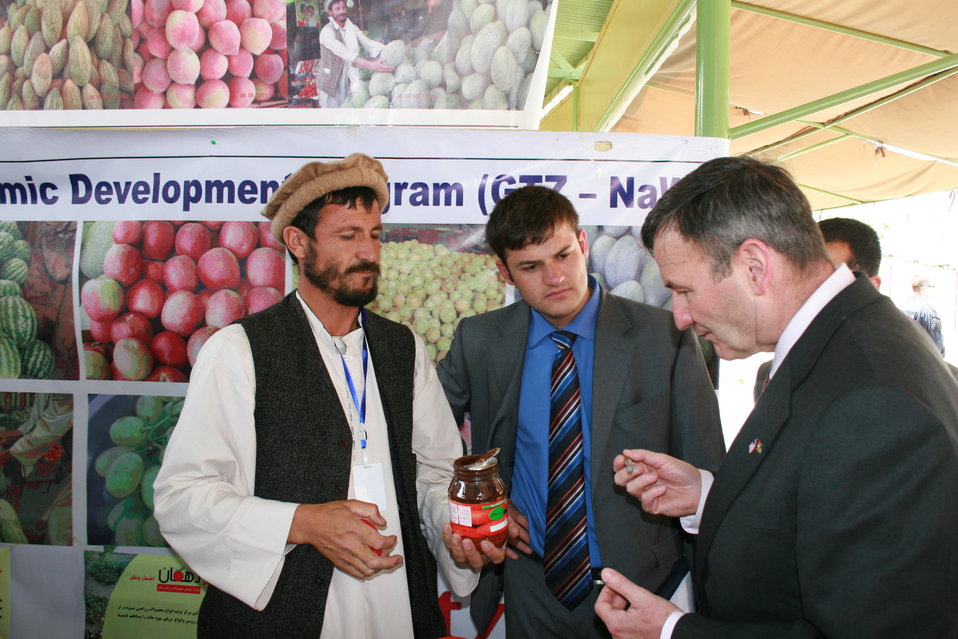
AgFair tasting Tomato Paste May 20, 09

On May 20, 2009, Ambassador Eikenberry joined government officials, farmers, agribusiness representatives, and international investors at the launch of the Kabul International AgFair on May 20. Held at the Ministry of Agriculture, Irrigation and Livestock’s Badam Bagh Demonstration Farm in Kabul, the fair showcases Afghanistan’s wealth of fresh produce, provides lucrative business opportunities, and demonstrates innovative agricultural technologies. It is expected to attract more than 50,000 participants from May 21-22.

U.S. Ambassador Karl Eikenberry and Afghan Acting Minister of Agriculture, Irrigation and Livestock (MAIL) Saleem Kunduzi gave opening remarks at the AgFair’s launch. “The United States Government is co-sponsoring national and regional AgFairs like this one to encourage trade and generate business opportunities in the agriculture sector,” Ambassador Eikenberry said. “In a country that is 80 percent rural, promoting licit crops and agriculture sector job creation are two essential steps to successful development in the region.”

Member of Parliament Abdul Salam Qazizada offered bold remarks, stating that we need to engage more with farmers in every province throughout the country.

Following the ceremony, Ambassador Eikenberry visited a number of vendors at the fair with Acting Minister Kunduzi and Mr. Qazizada. In speaking with farmers displaying their produce, Ambassador Eikenberry found that many have increased yields due to USAID assistance, have found regional buyers for their produce, and were grateful for the opportunities that AgFair provides.

Ambassador Eikenberry also discussed the state of agriculture with Minister Kunduzi and Mr. Qazizada. They agreed that while some progress has been made, there is a great deal more work to be done. Ambassador Eikenberry reiterated from his speech that USDA Secretary Vilsack recently met with Minister Rahimi to discuss the U.S. commitment to agriculture development. In a message to the Afghan public, Secretary Vilsack stressed that the USG aims to play a leading role by bringing more agriculture experts to the provinces and supporting agriculture research such as the Badam Bagh Demonstration Farm. Additionally, he looks “forward to working together to increase agricultural productivity, which will result in more jobs throughout the entire value chain, and a better quality of life for the citizens of Afghanistan.”

The United States Government is proud to support Afghan agriculture. Since 2002, America has provided more than 1 billion dollars in assistance to agriculture and rural development. AgFairs like the one Ambassador Eikenberry visited creates awareness of Afghanistan’s expanding agricultural sector, promotes new agricultural technologies that increase productivity, and provides a forum to connect farmers to local and international buyers. These results will contribute to Afghanistan’s prosperity.

We are already seeing the results of these fairs. Since 2007, Afghanistan’s agricultural fairs have attracted more than 500,000 participants from across the nation and the world, generated millions of dollars in sales of the country’s high-value produce, and provided participants with a competitive edge in one of the fastest growing markets in Central Asia.

As Ambassador Eikenberry stated, “The word is out – with over 180 international businesses represented at this fair, it is obvious that Afghanistan has sparked the interest, and appetite, of the world.”